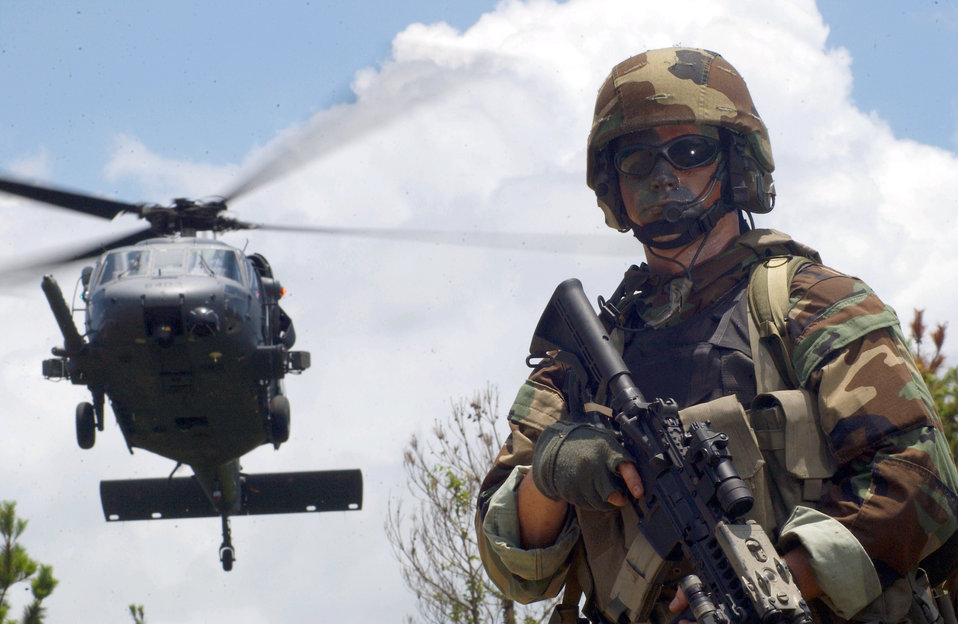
Standing at the ready

KADENA AIR BASE, Japan -- Staff Sgt. William Moore helps secure a landing zone as part of a training extraction here Aug. 5. Sergeant Moore is a pararescueman with the 31st Rescue Squadron.